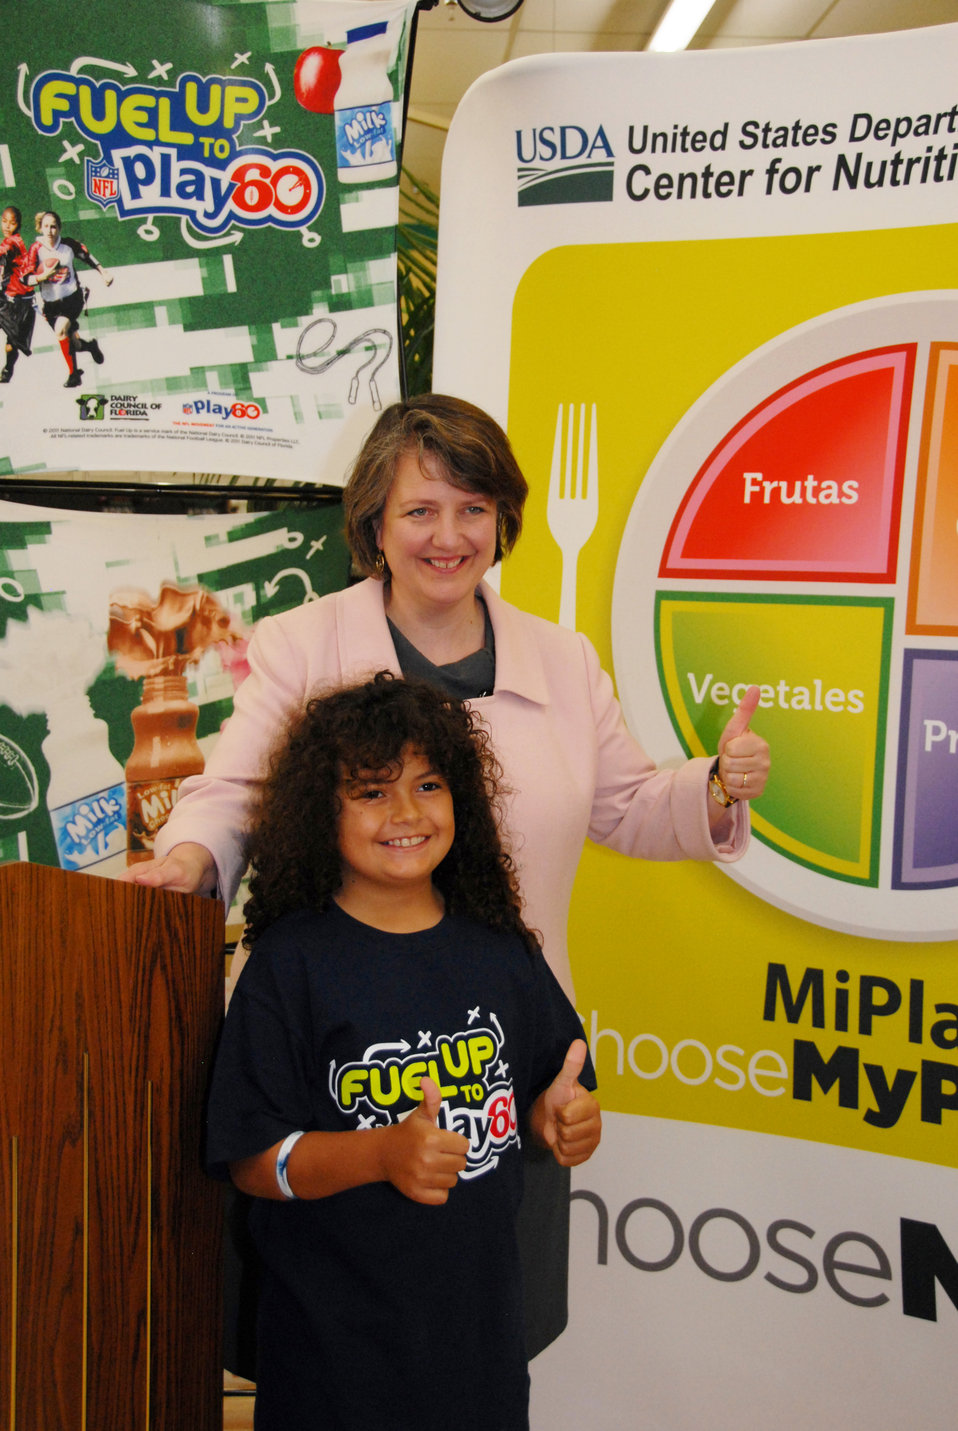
Agriculture Deputy Secretary Kathleen (left) with Bobby Sena gives thumbs up to celebrate the first anniversary of the Myplate food icon and to highlight MiPlato at the Caribbean Supercenter, in Orlando, FL., on Friday, June 15, 2012. Secretary Merrigan visited Orlando's Caribbean Supercenter, a family-owned business committed to community involvement, to announce a MyPlate Community Partnership with the store.